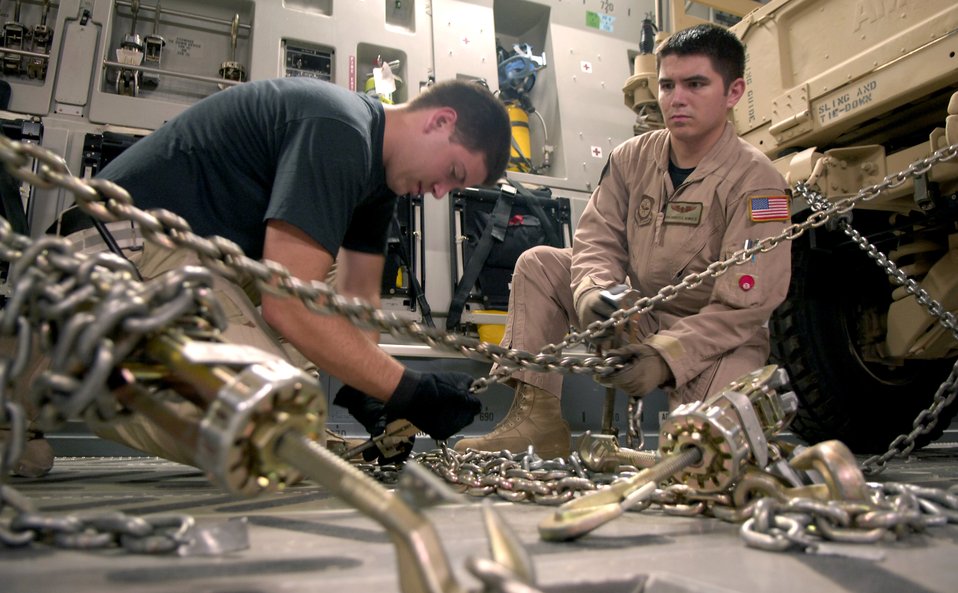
Globemaster operations

Airman 1st Class Spencer Stacey (left) and Senior Airman Charles Reimer III secure two Humvees before takeoff at a forward operating base in Southwest Asia on Aug. 5. The Airmen are C-17 Globemaster III loadmasters with the 816th Expeditionary Airlift Squadron. The squadron flew more than 1,200 sorties in July, delivering cargo and troops in support of operations Iraqi Freedom and Enduring Freedom.